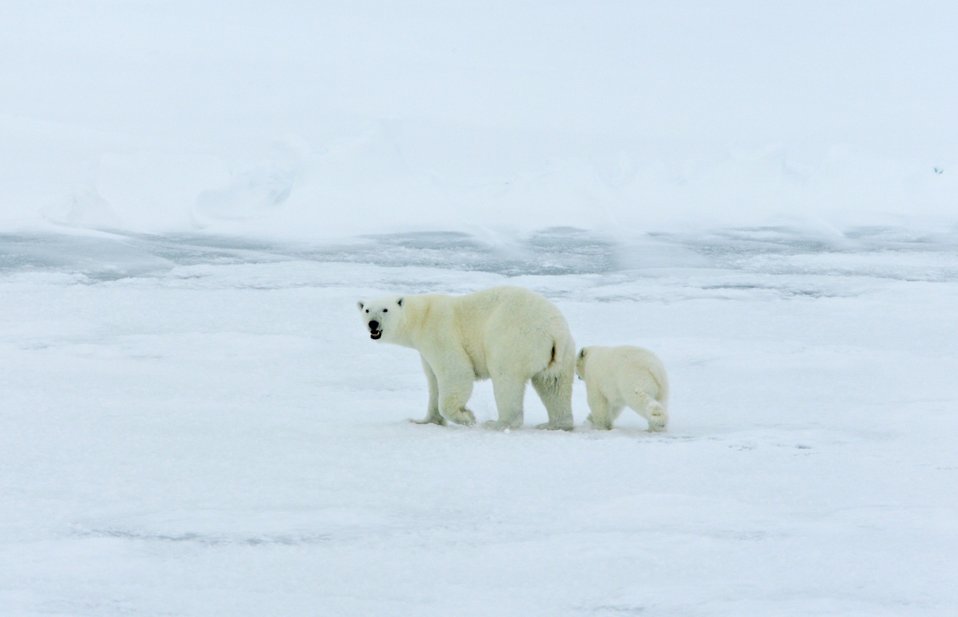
Polar bear with cub on the ice in the Arctic Ocean north of western Russia.